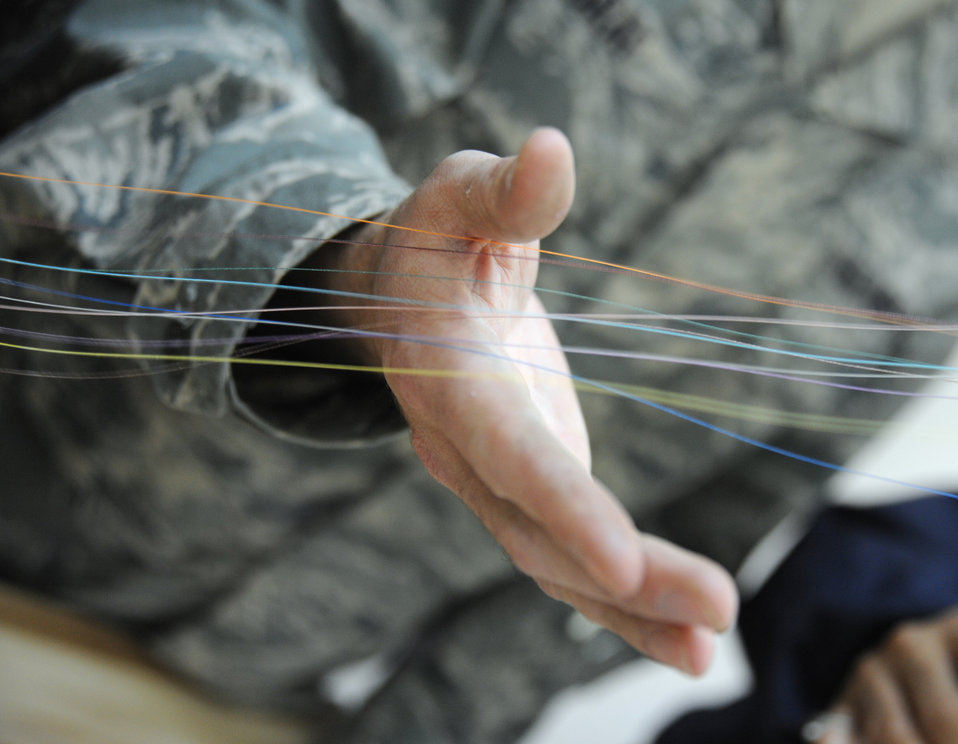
Fiber optics course

Staff Sgt. Gary Graf, an 821st Expeditionary Training Squadron cable and antenna maintenance instructor at Camp Taji, Iraq, holds the separate colors of the different fiber optic wires during a fiber optics maintenance course Feb. 13, 2010. During this 42-day course the Iraqi military students learn about theories, splicing cable and the improved capabilities that fiber optics can bring. Sergeant Graf is deployed to the 821st ETS from Sheppard Air Force Base, Texas.